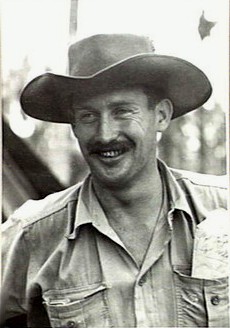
September 1942. Port Moresby, Papua New Guinea. Squadron Leader L. Jackson, Commanding Officer of No. 75 (Kittyhawk Fighter) Squadron RAAF.